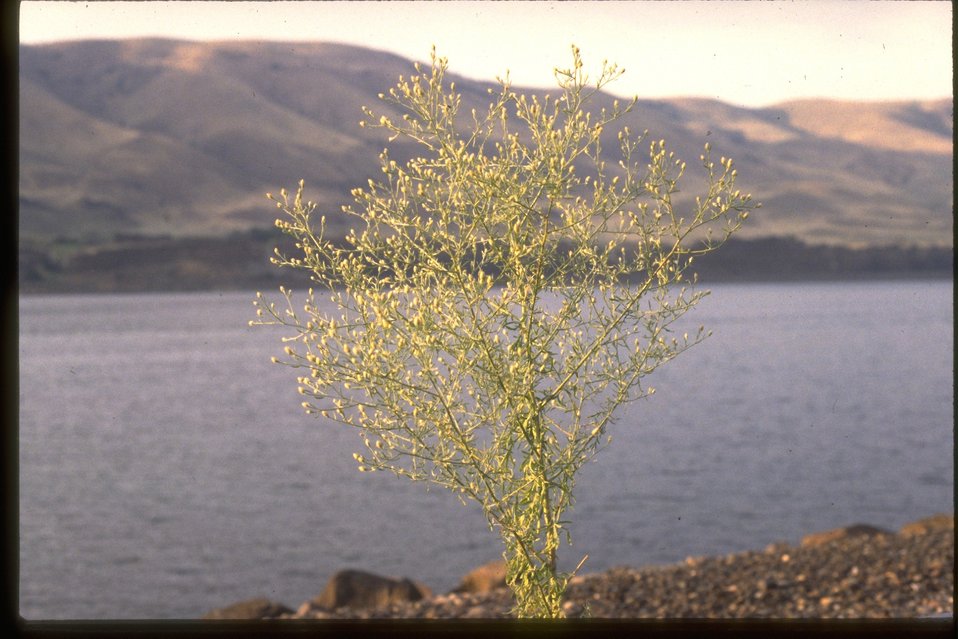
Single plant of diffused knapweed.